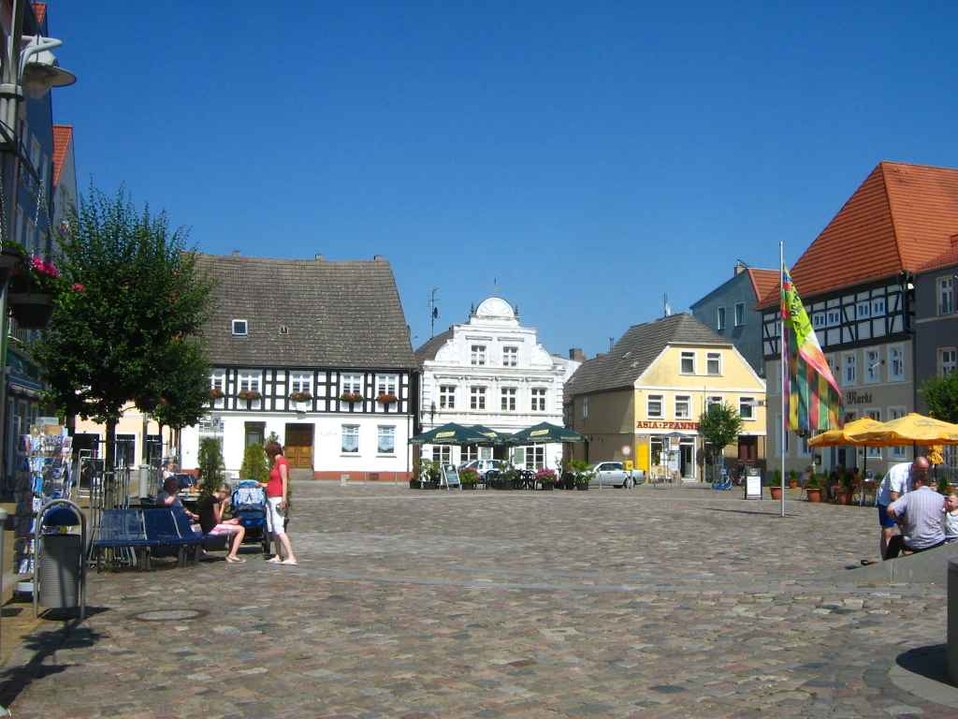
Deutsch: Ueckermünde, Marktplatz örtlicher Akkordeonmusiker: Volker Hoffmann